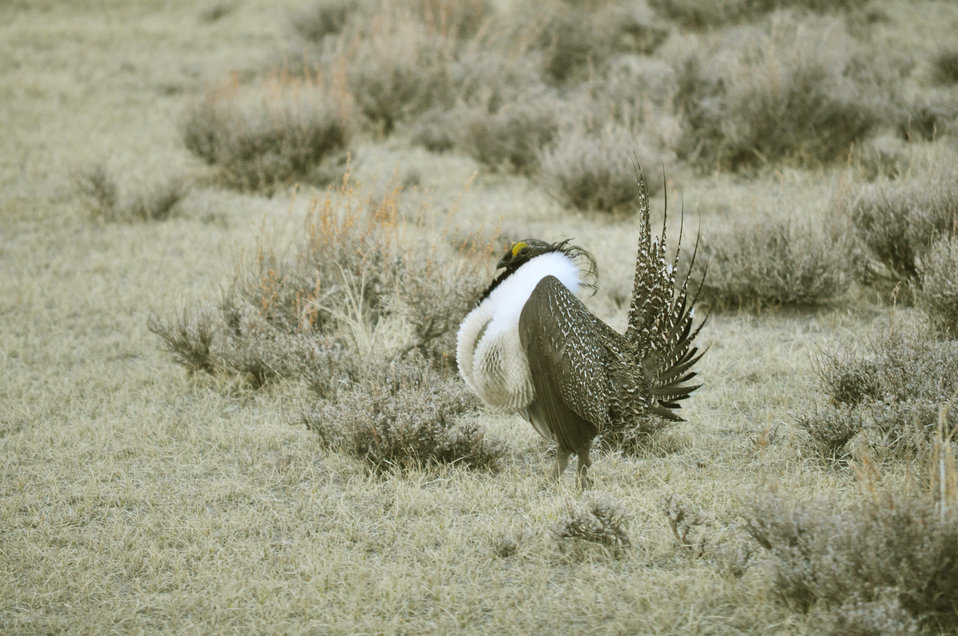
Male greater sage-grouse struts at lek (dancing or mating grounds) to attract females near Bodie, California.